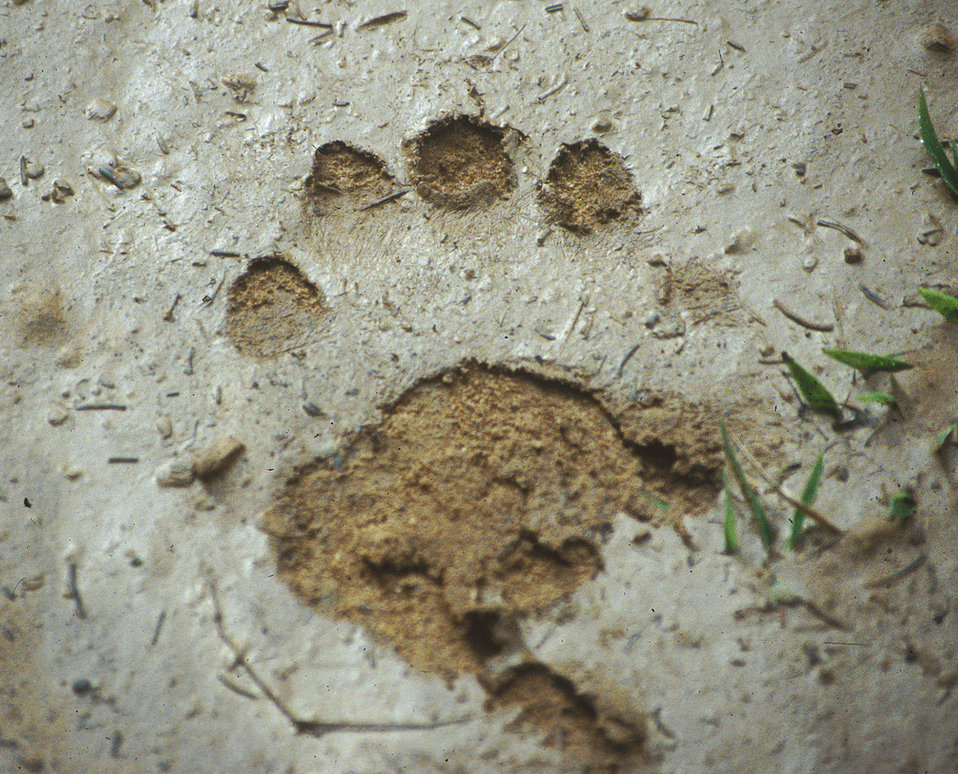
Bear Foot

A fresh black bear track in the mud leaves an impression.